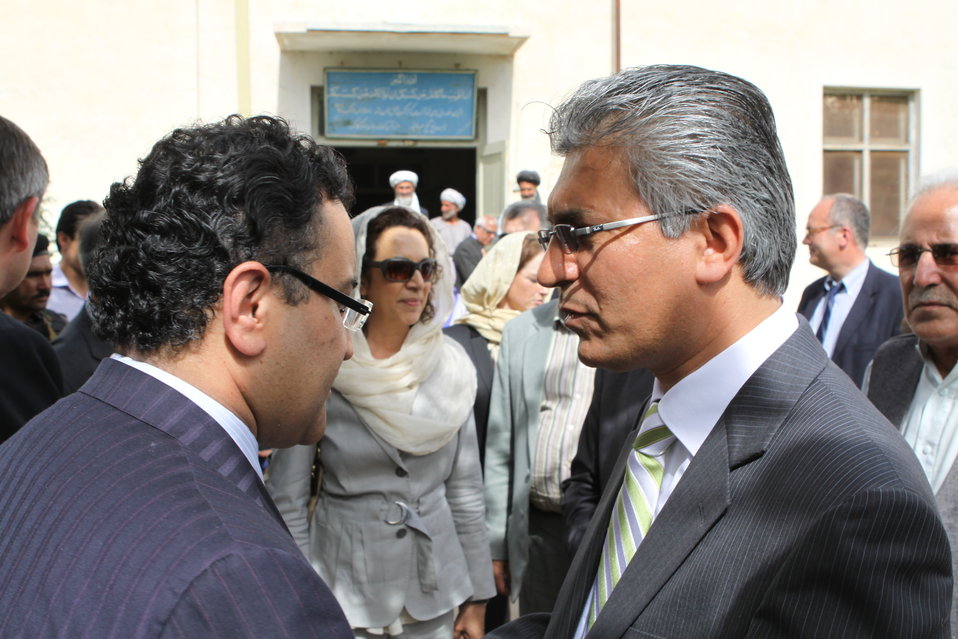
100525 Hirat Textile Company 785